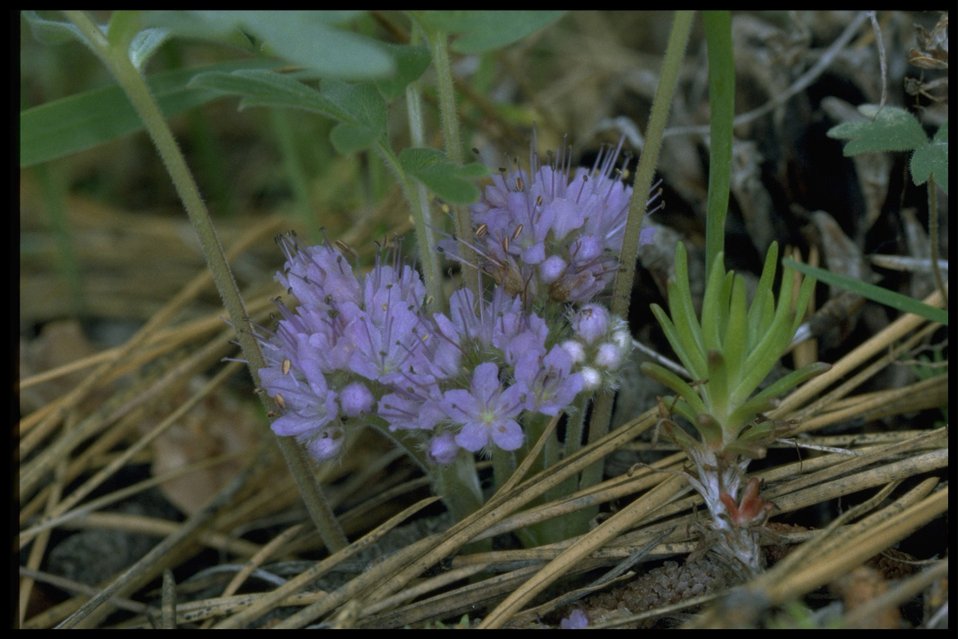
Medium shot of ballhead waterleaf (Hydrophyllum capitatum var. capitatum).